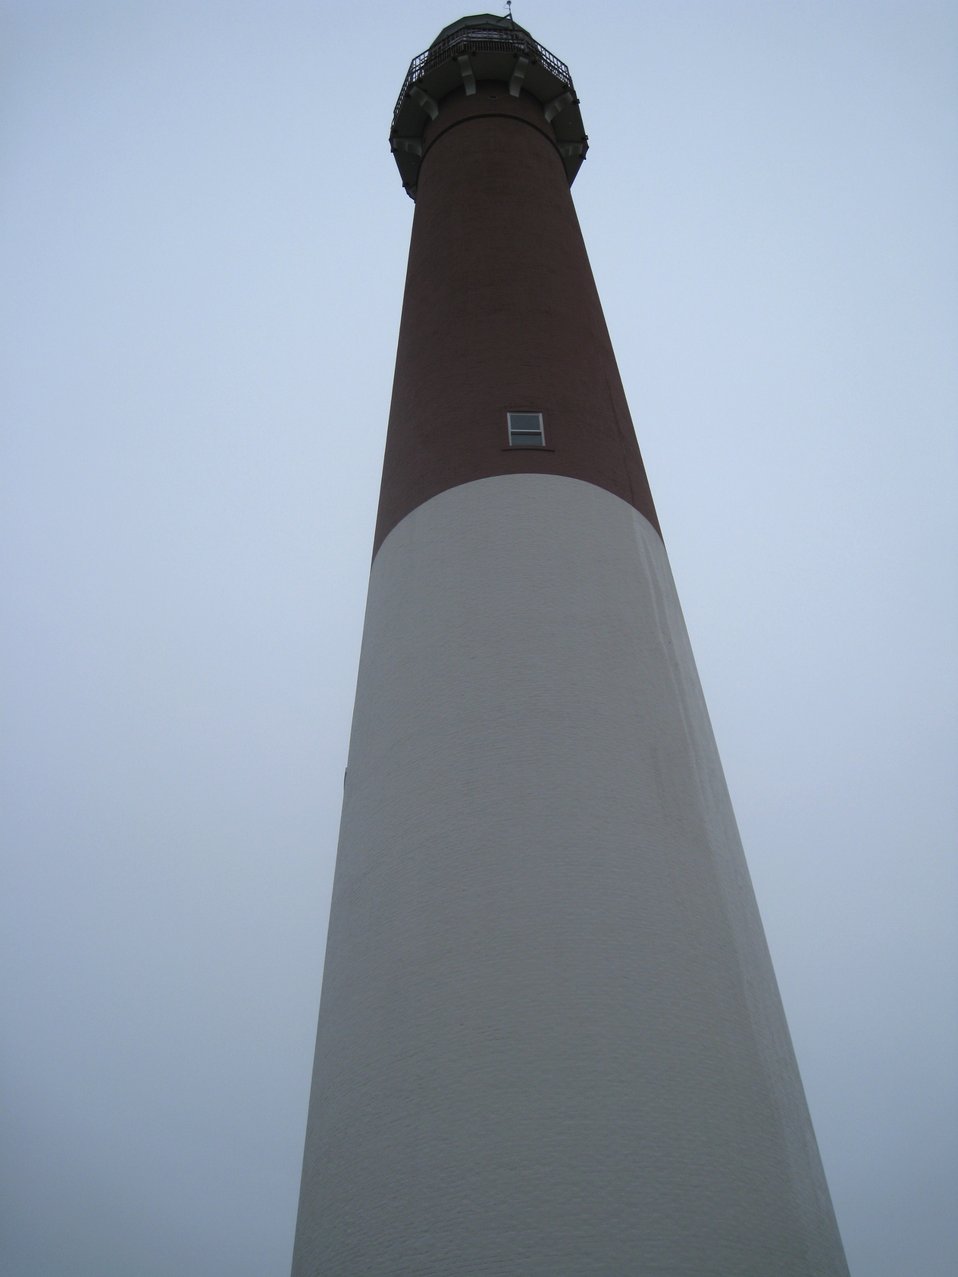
Barnegat Lighthouse